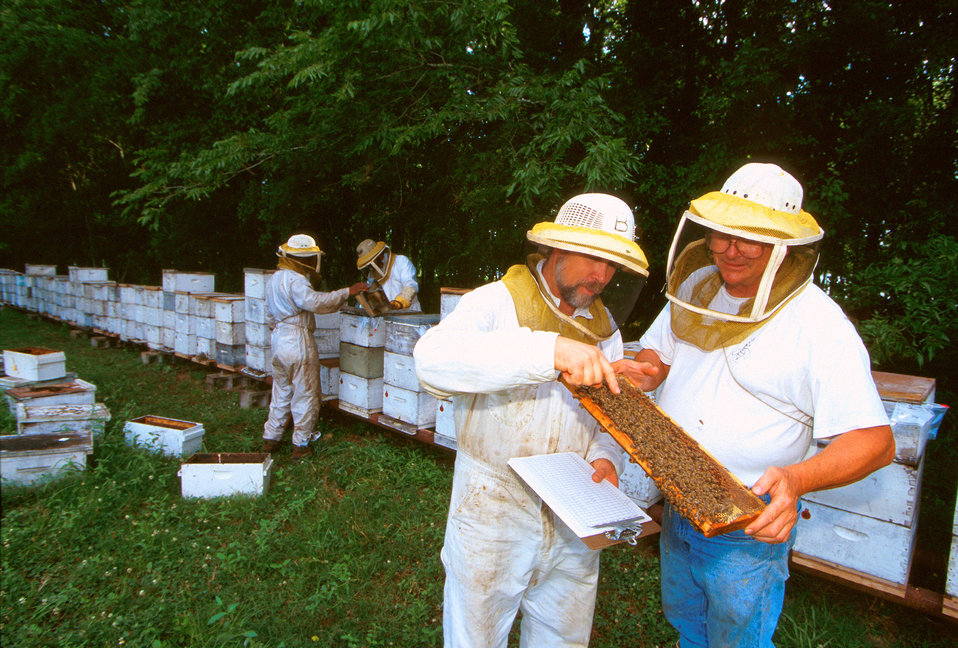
Beekeeping cooperator Steve Bernard and U.S. Department of Agriculture (USDA) Agricultural Research Service (ARS) geneticist Tom Rinderer along with USDA ARS associates Tony Stelzer and Warren Kelley (background) of the Baton Rouge laboratory in LA inspect colonies of Russian and other honey bees.